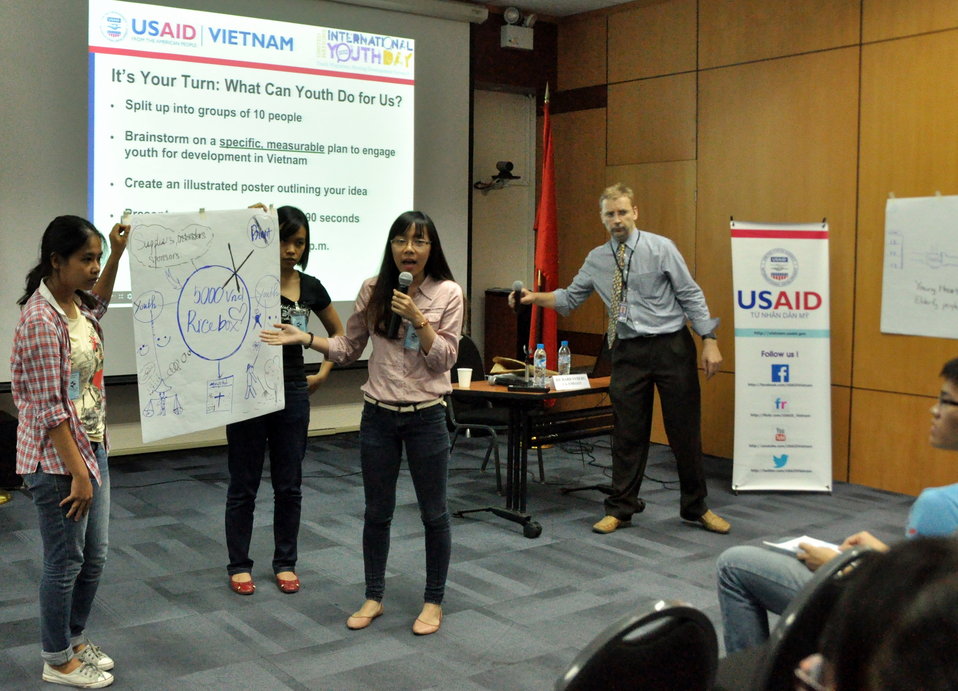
International Youth Day 2013: USAID hosts a lively discussion and group exercise on how youth can join in to advance development 0699

Hanoi, August 12, 2013.